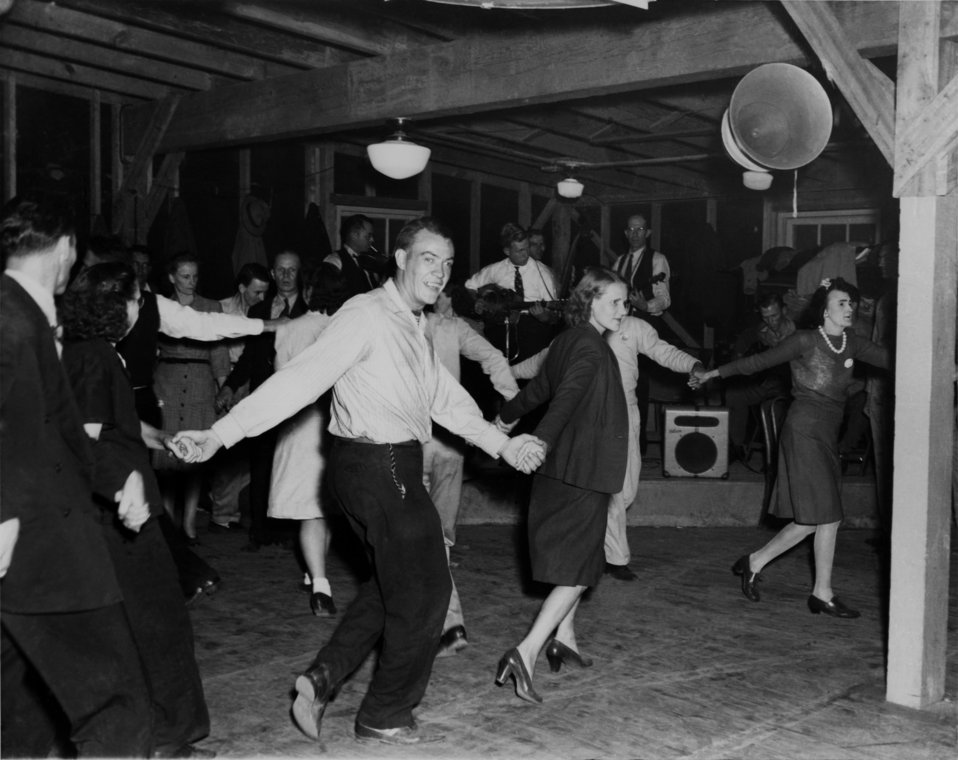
Square Dancing Oak Ridge

83-3 Ed Westcott 10/1944
Oak Ridge Tennessee